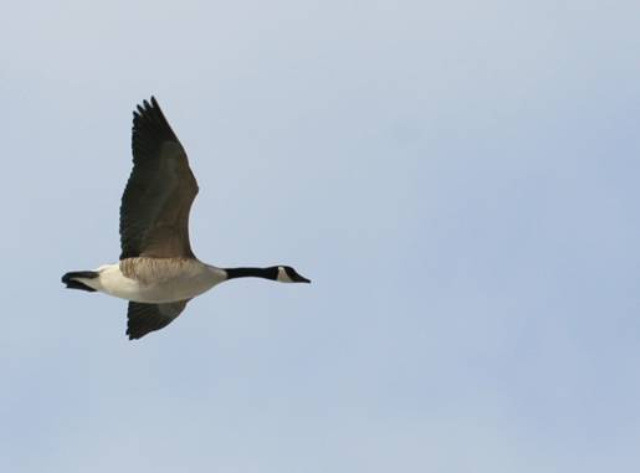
Canada Goose in flight